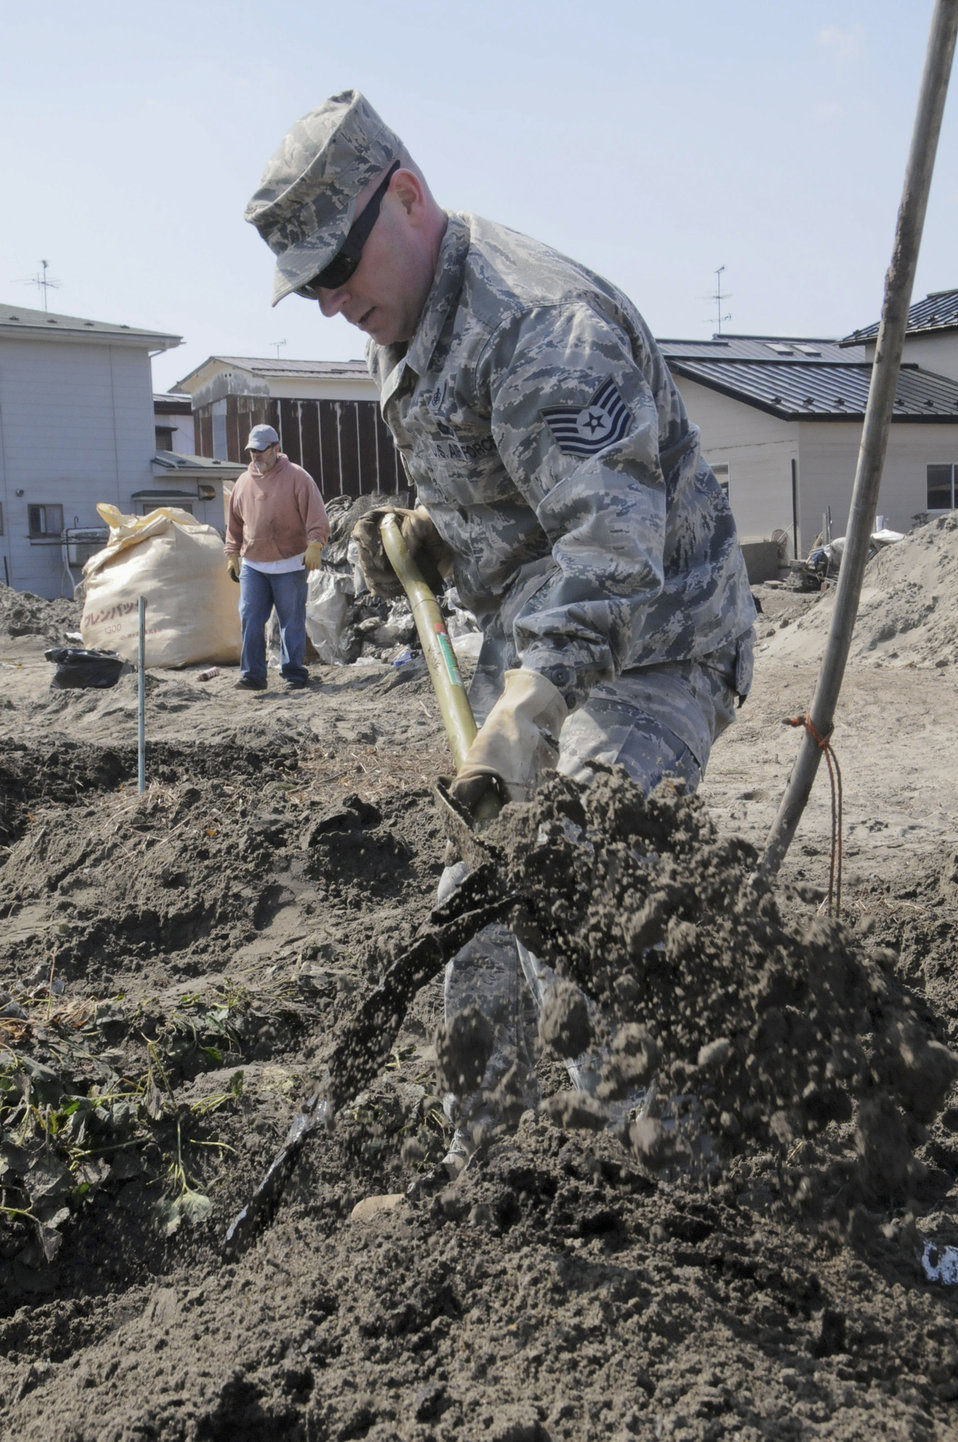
Misawa helps

An Airman digs through a strawberry field, looking for debris April 1, 2011, in Hachinohe, Japan.